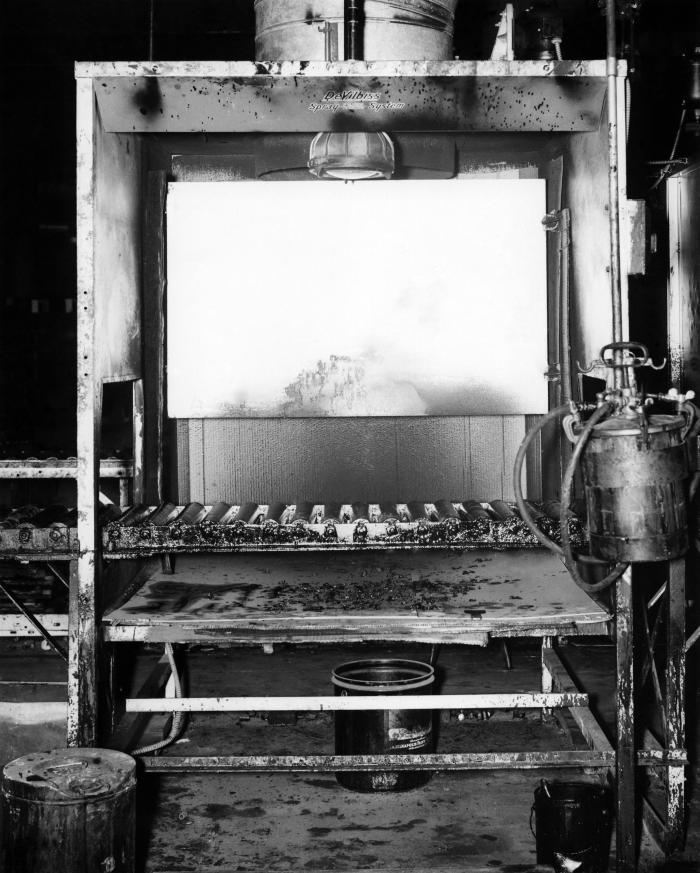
This historic 1947 image was provided by the Center for Disease Control's (CDC), National Institute for Occupational Safety and Health (NIOSH), depicted a mechanically ventilated paint spray booth at an Indianapolis, Indiana, RCA Co. factory. The source of the image was the Public Health Service (PHS), Rockefeller Foundation's, International Health Division (IHD). The toxic nature of paint fumes made it necessary to provide adequate ventilation at the site of activities involving the liberation of these noxious vapors such as was the case in this confined space of a paint booth. Additional necessary garments and protective devices would include a filtered breathing mask, goggles, and heavy-duty gloves.